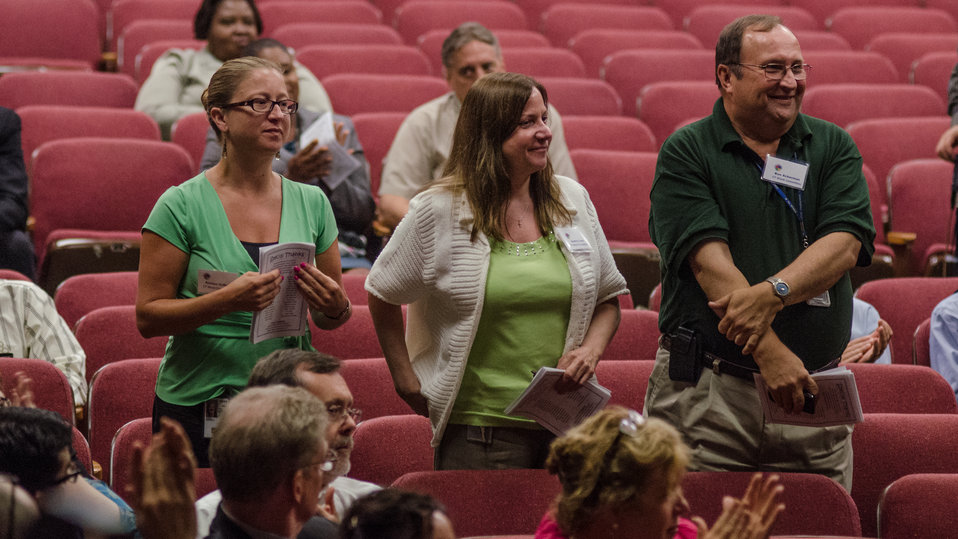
U.S. Department of Agriculture (USDA) employees listen to speakers at USDA’s Rural Development (RD) 2nd Annual Cultural Transformation kickoff opening ceremony and forums, themed “Employees Influencing Change,” on Tuesday, Aug. 13, 2013 USDA in Washington, D.C.